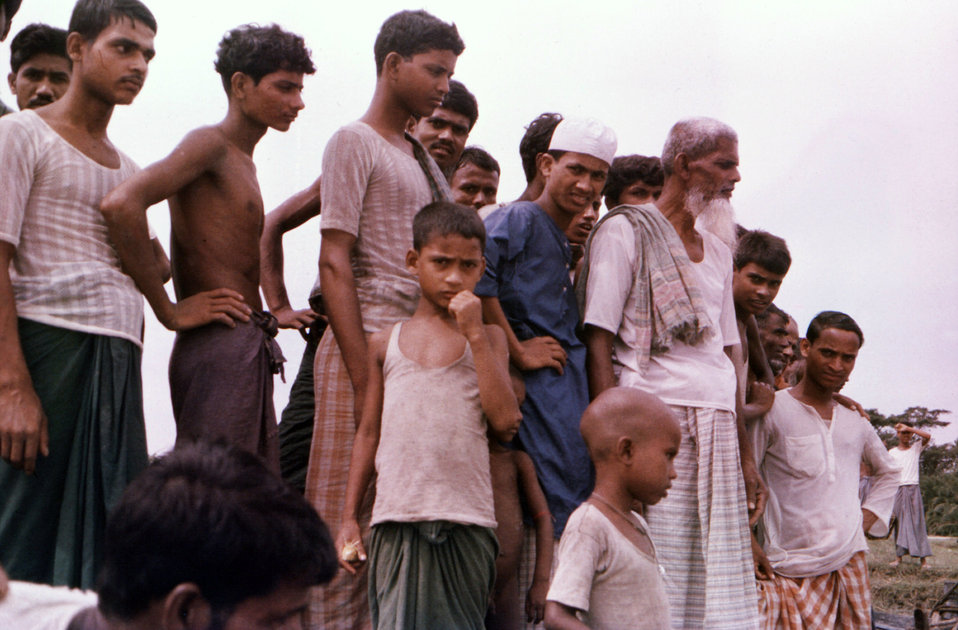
Depicted in this September, 1975 photograph, was a grouping of Bangladeshi villagers, amongst whom, stood the white-bearded father of a woman who'd died of smallpox, at what was labeled the 'Lord Harding Bazaar Outbreak' site, which began on March 29th. His daughter, who's symptoms began on August 29th, was the last person to die at this site on September 1, 1975. The outbreak was first reported on September 10th, 10 days after her death. There were a total of 43 cases of smallpox, with 9 deaths. The Bazaar can be found on Bangladesh's largest island, Bhola Island, in Lalmohan Thana (county).